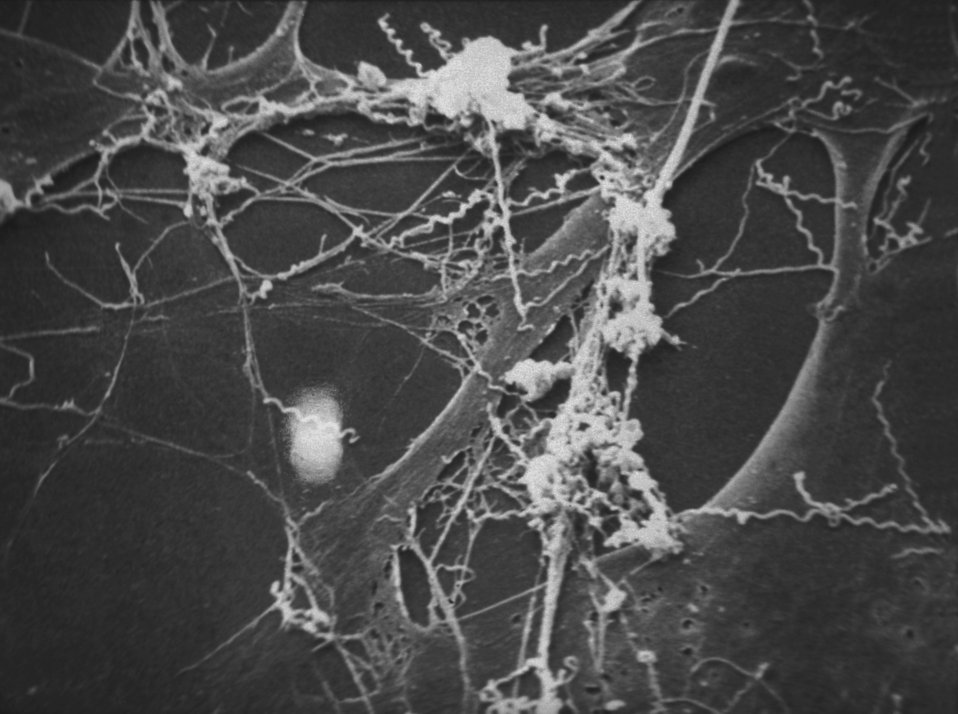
Electron micrograph of Treponema pallidum on cultures of cotton-tail rabbit epithelium cells (Sf1Ep).